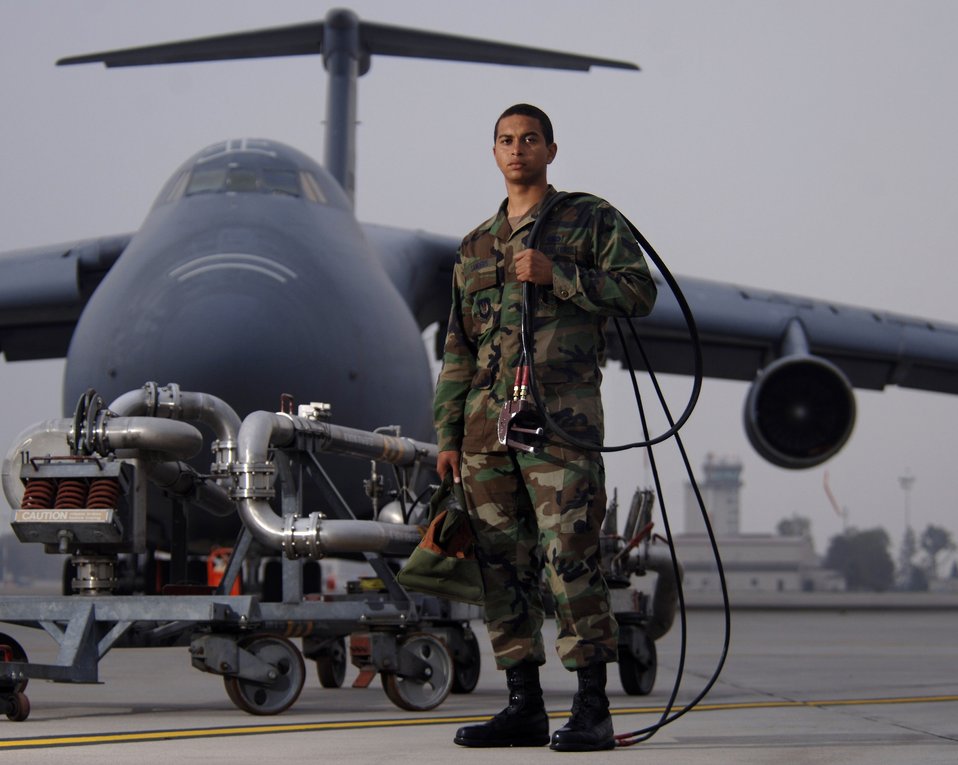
3-level fuels specialist pumps 3 million gallons

Airman 1st Class Hazen Sanders set a new Ramstein Air Base record in September 2007 when he pumped more than 3.1 million gallons of JP-8 fuel into 187 aircraft at the base in Germany. One of the most junior members in the 435th Logistics Readiness Squadron, the 20-year-old fuels specialist from Dermott, Ark., is still in upgrade training as a 3-skill-level apprentice. He said he was inspired to attempt the milestone after co-workers began telling him it was impossible.